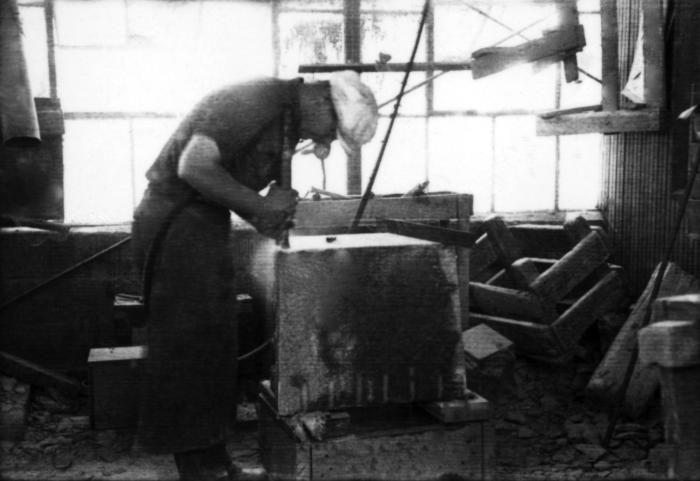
This October 1947 photograph was provided by the Center for Disease Control's (CDC), National Institute for Occupational Safety and Health (NIOSH). The image depicted a stonecutter in the process of carving a gravestone with a pneumatic drill inside a Kansas workshop. The worker did not appear to be wearing any eye protection, or any filtered breathing device that would have limited his exposure to inhaled dust. Workers can be exposed to potential respiratory health hazards, as well as other physical injuries when working in stone cutting and quarrying industries.